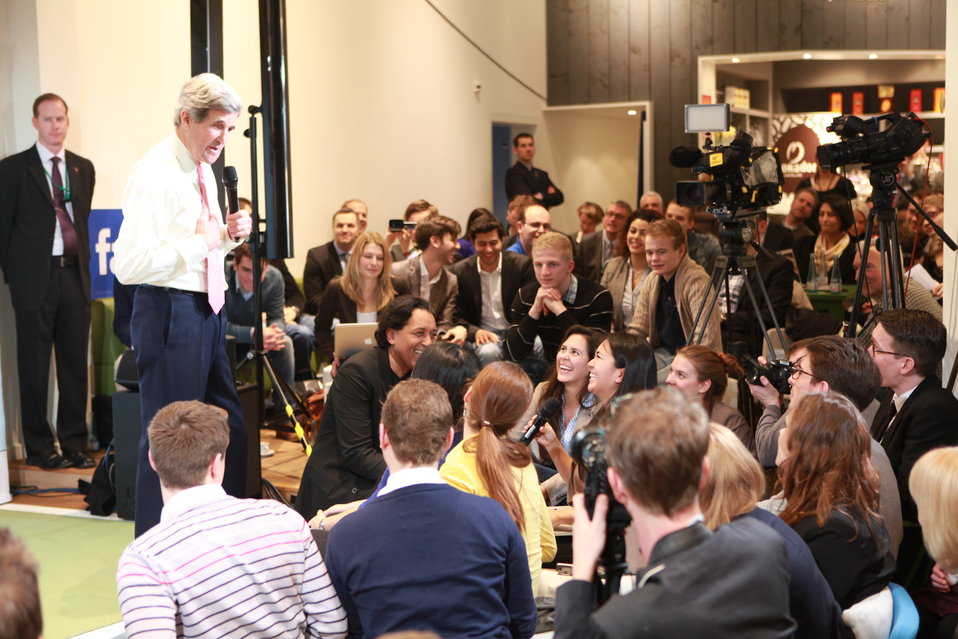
Secretary Kerry Engages Young German Innovators and Leaders in Berlin

U.S. Secretary of State John Kerry engages young German innovators and leaders at his first Youth Connect event with moderator/journalist Cherno Jobatey in Berlin, Germany, February 26, 2013.